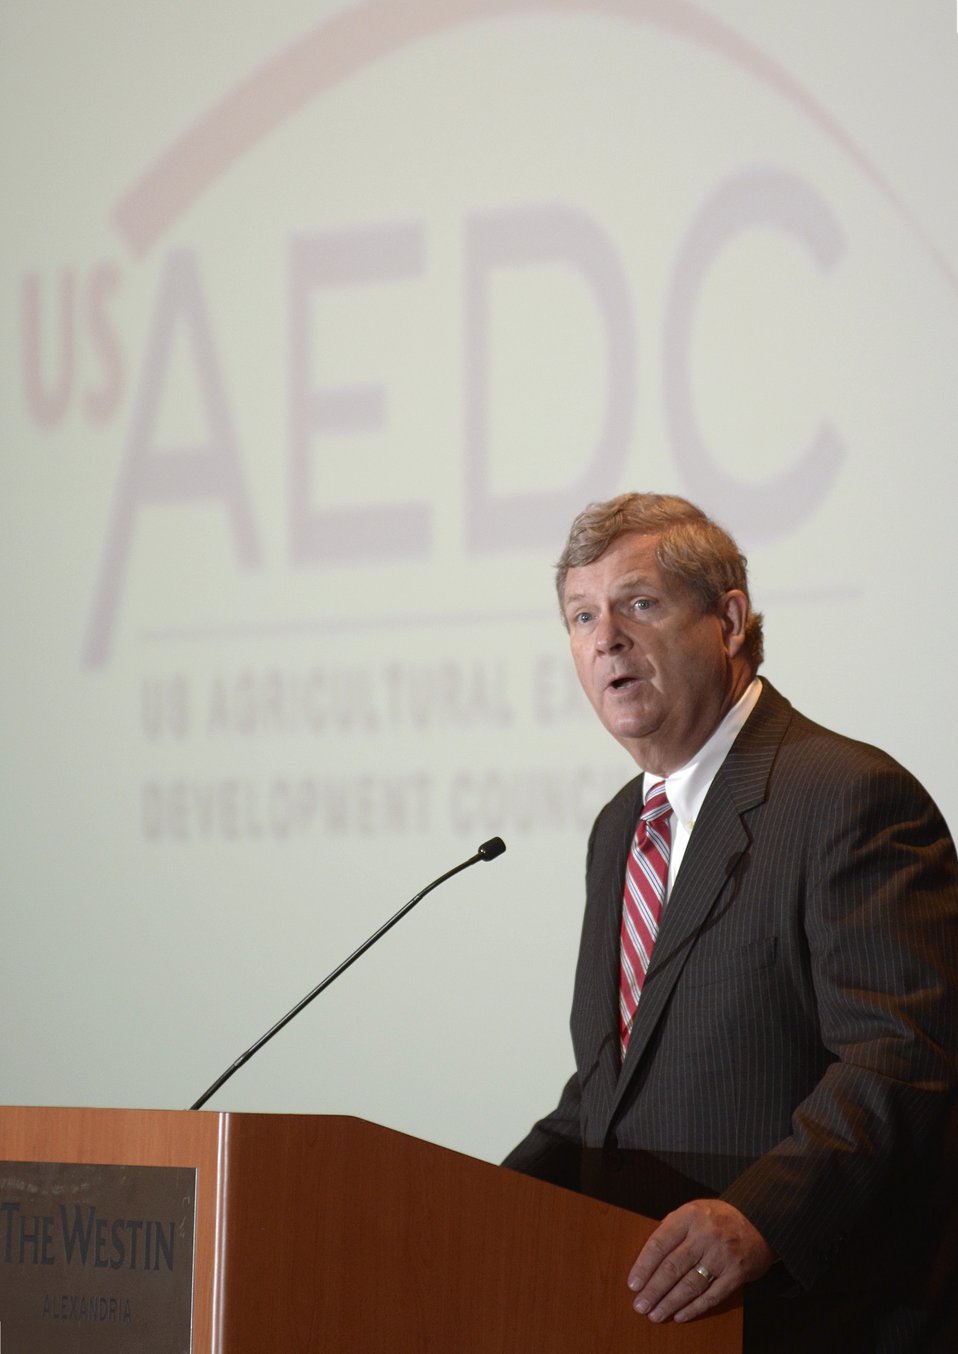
Agriculture Secretary Tom Vilsack presents keynote remarks at the U.S. Agricultural Export Development Council (USAEDC) Attaché Seminar, at the Westin Alexandria, in Alexandria, VA, on Wednesday, July 10, 2013. USAEDC is a non-profit private sector trade association that provides an exchange and coordination of information to promote the export of the products of U.S. agriculture. Their membership includes U.S. commodity trade associations, farmer cooperatives and state regional trade groups from around the country. In the interest of U.S. agricultural growers and producers their export promotion efforts, work in conjunction with the U.S. Department of Agriculture Foreign Agricultural Service.